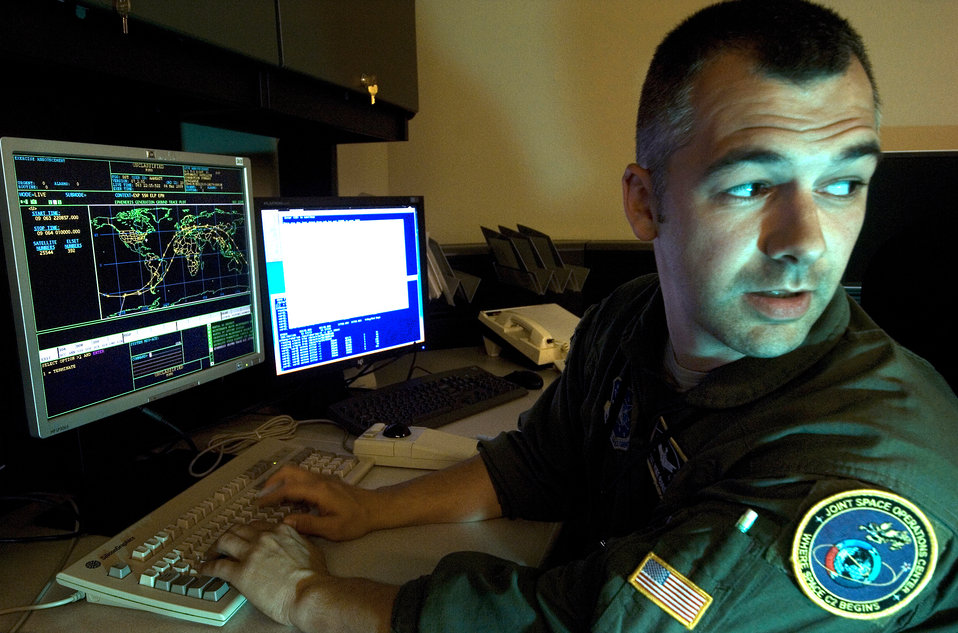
Joint Space Operations Center

Tech. Sgt. Michael Roberts, a sensor management analyst at the Joint Space Operations Center at Vandenberg Air Force Base, Calif., verifies the accuracy of a radar tracking station's observations of several man-made objects floating in space. The purpose of the JSpOC is to provide a focal point for the operational employment of worldwide joint space forces, and enable the commander of Joint Functional Component Command Space to integrate space power into global military operations.